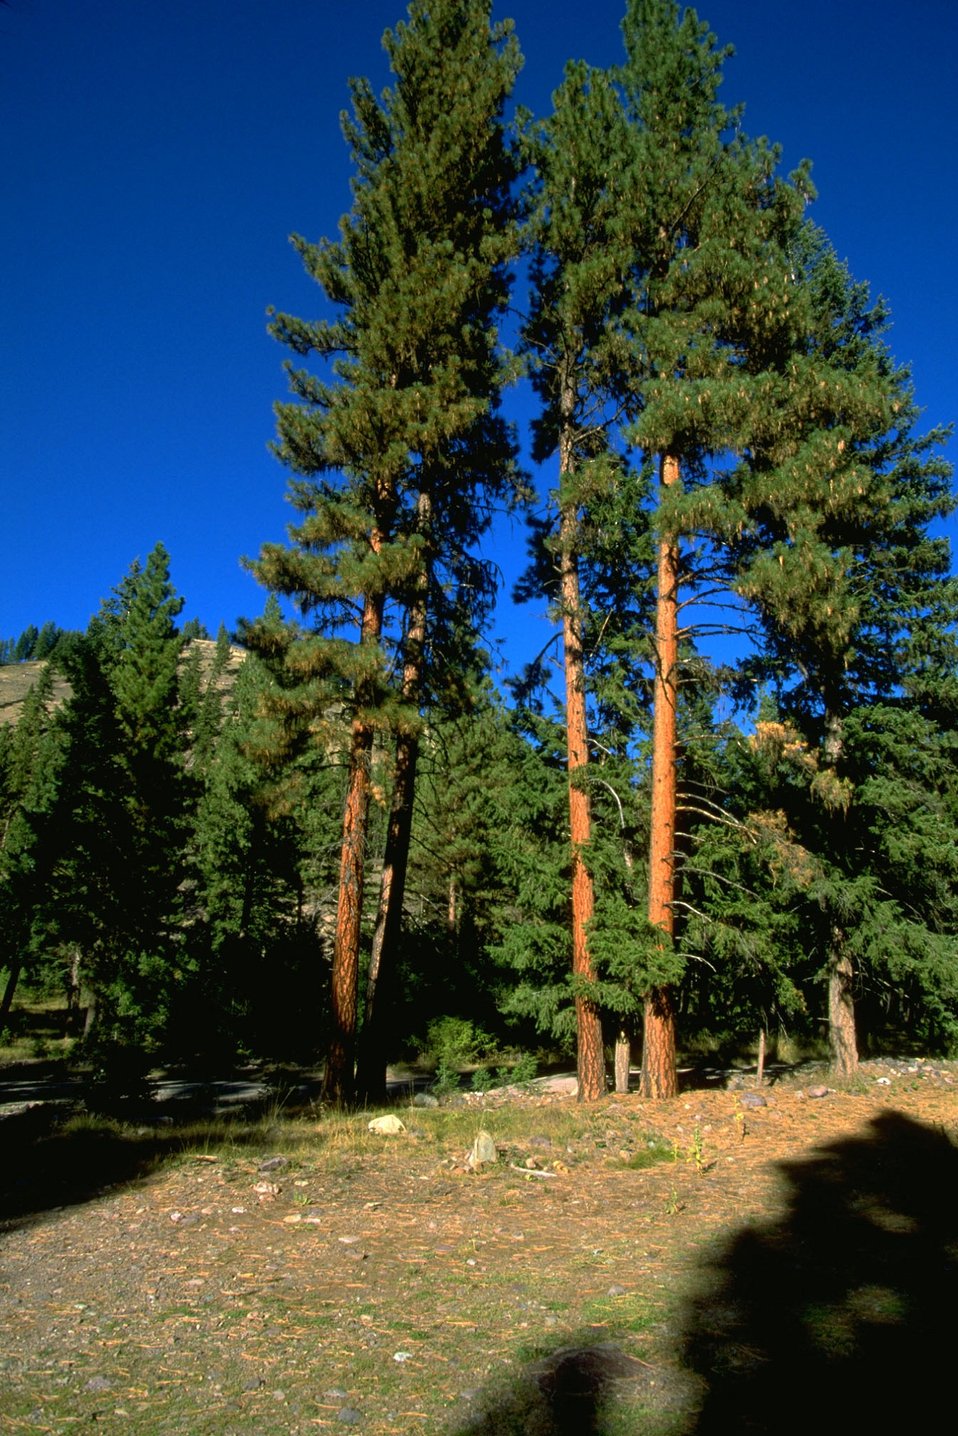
Old growth ponderosa pine along Blackfoot River (VERTICAL)